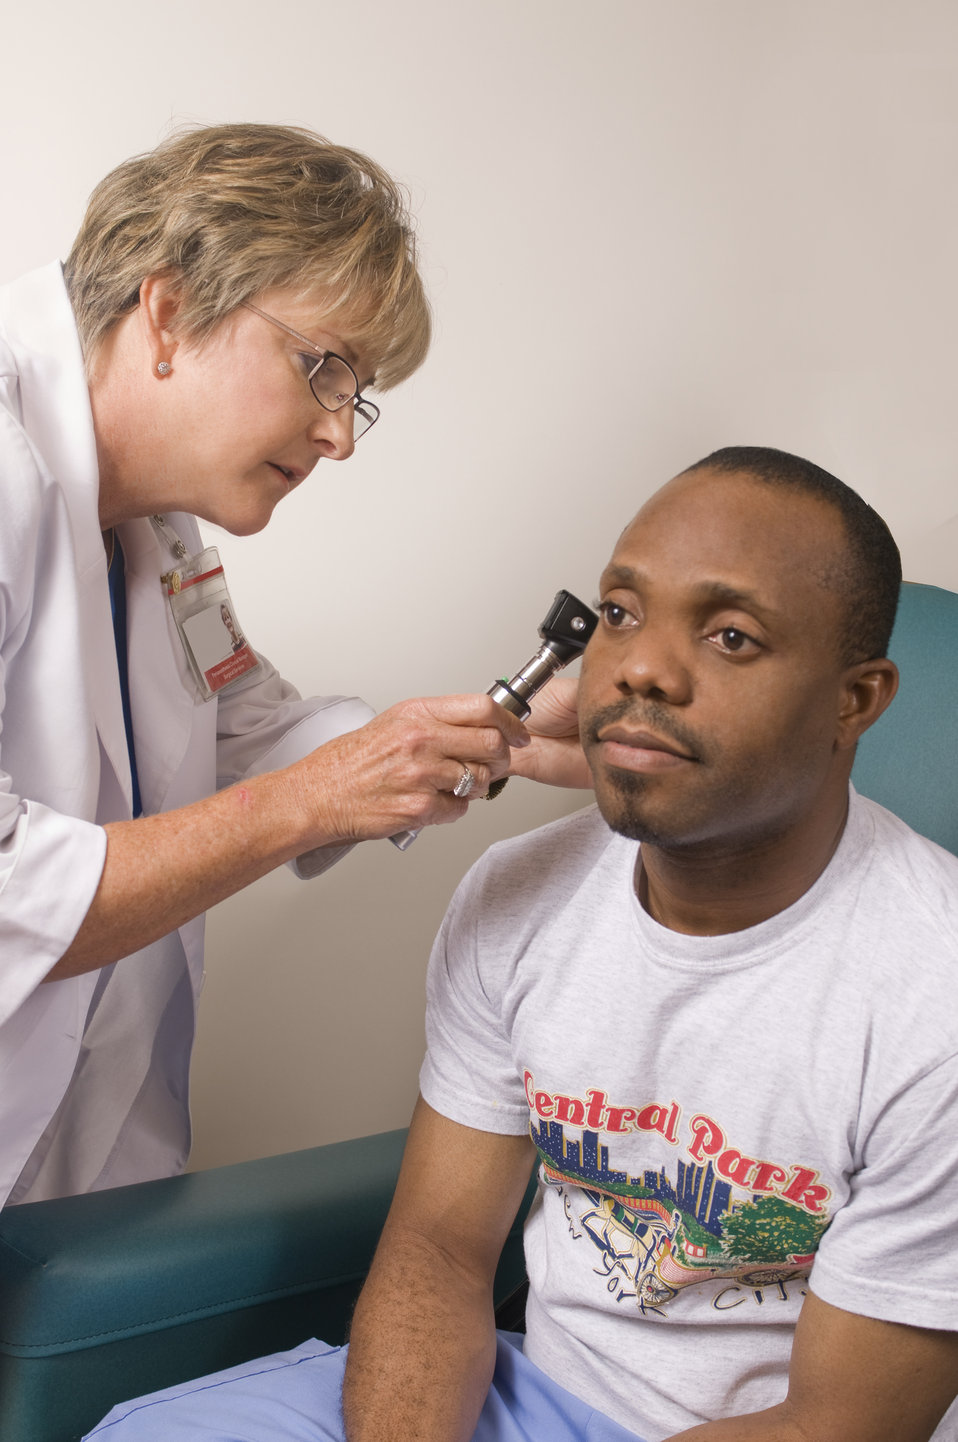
This image depicts a female clinician conducting an examination of a male patient's right ear, using an otoscope, which she'd inserted into the right ear canal.